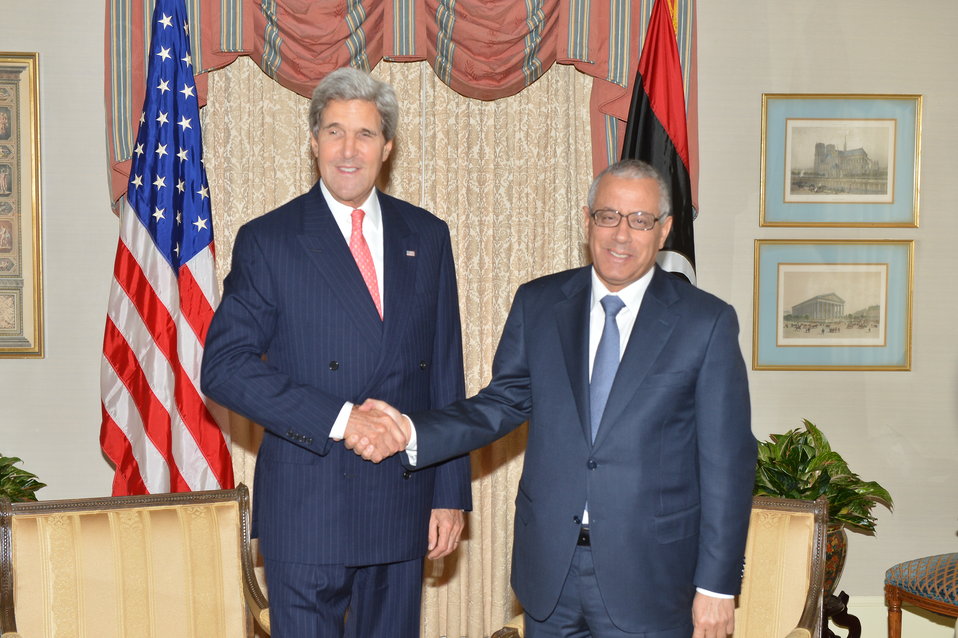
Secretary Kerry Meets With Libyan Prime Minister Zeidan

U.S. Secretary of State John Kerry meets with Libyan Prime Minister Ali Zeidan in New York City on September 26, 2013.